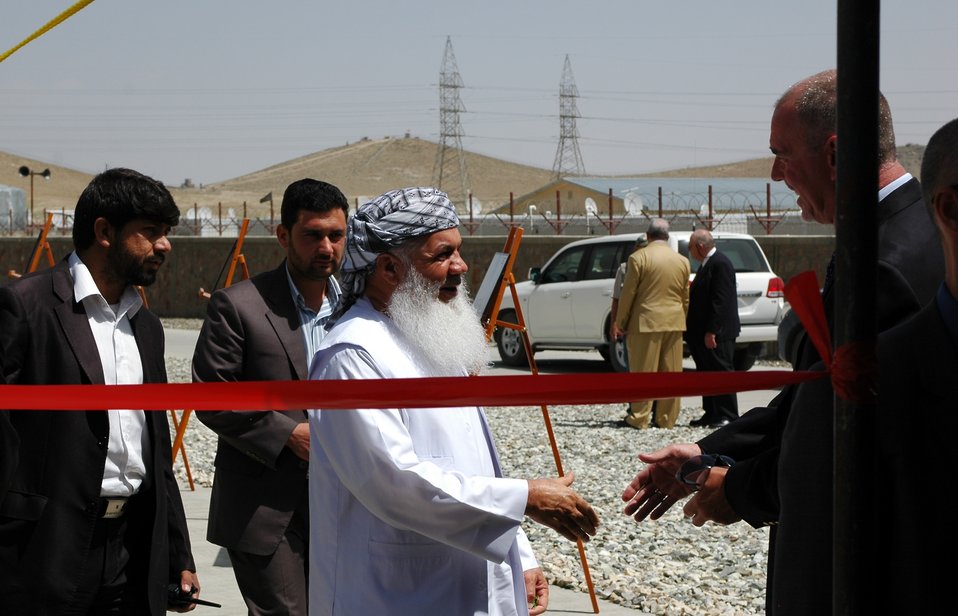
105 MW Tarakhil Power Plant Handover